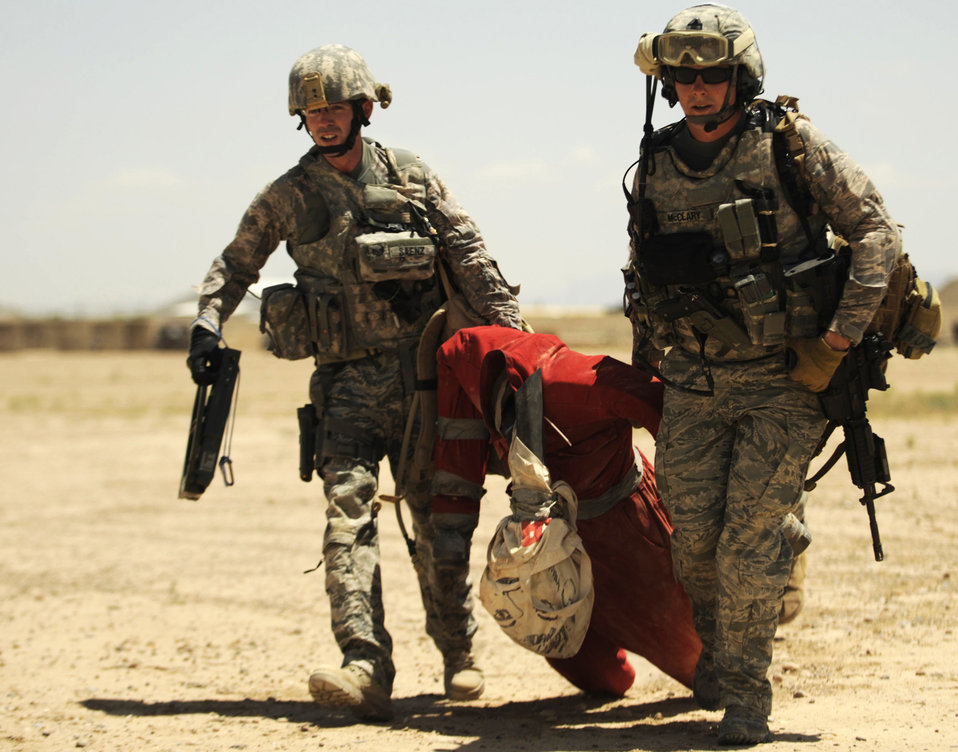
Kandahar Airmen protect servicemembers from IEDs

Staff Sgts. Ryan McCleary and Scott Saenz drag a simulated injured person from an improvised explosive device site during joint explosive ordnance training May 5 at Kandahar Airfield, Afghanistan. Sergeant McCleary and Saenz are both explosive ordnance disposal technicians with the 755th Explosive Ordnance Disposal unit.